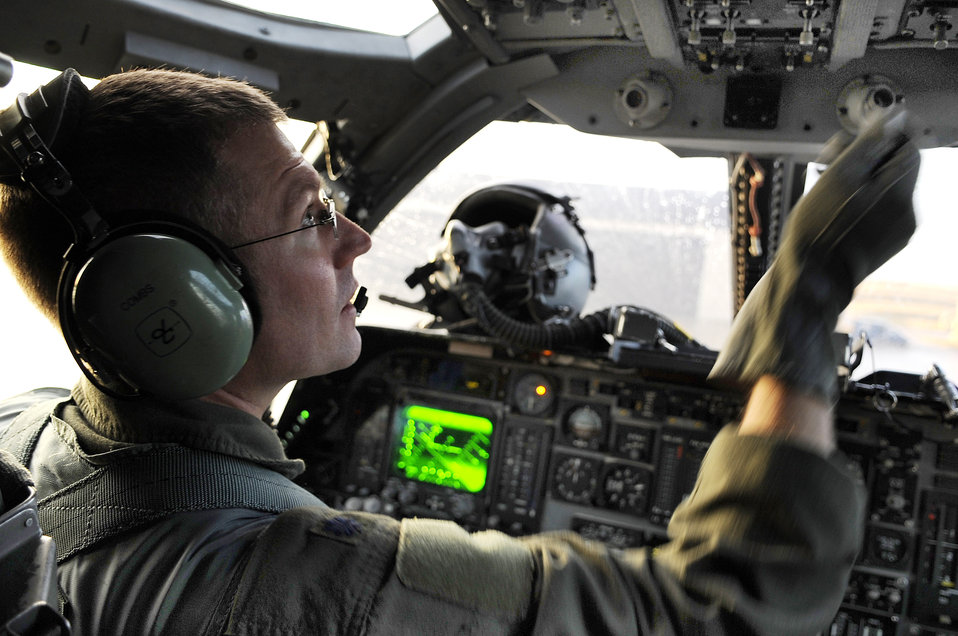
B-1s at Ellsworth

Lt. Col. Jason Combs, 28th Bomb Wing director of staff at Ellsworth Air Force Base, S.D., works his way through preflight checklists from the cockpit of a B-1B Lancer, Oct. 15, 2009. The aircrew performs pre-flight checks to ensure all systems are functioning before every mission.